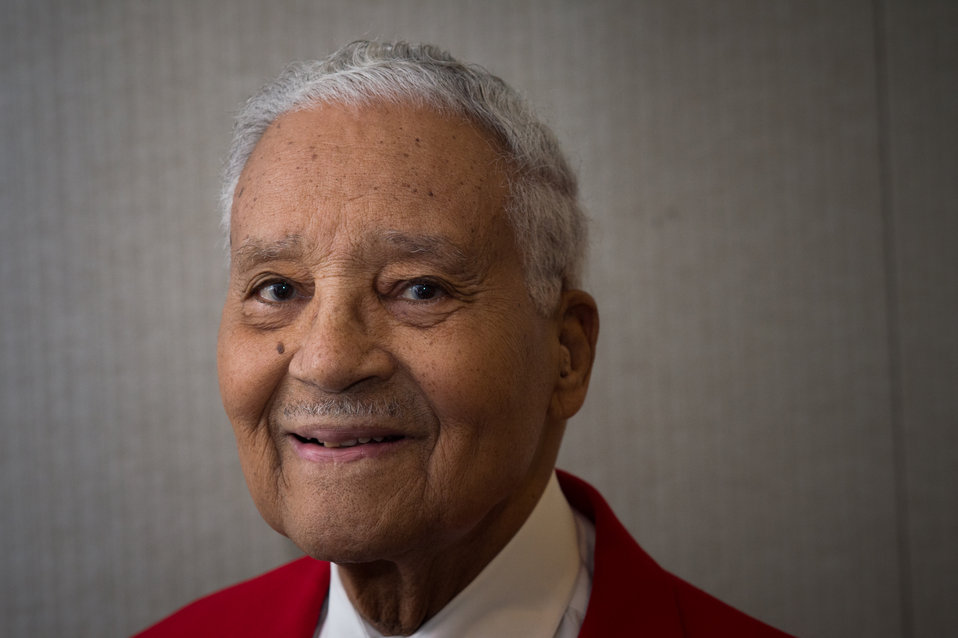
Pilot and Tuskegee Airman, Colonel Charles Edward McGee, U.S. Air Force (USAF) ret. was a guest speaker at the U.S. Department of Agriculture's (USDA) Office of the Assistant Secretary for Civil Rights (OASCR) program “In conversation With Tuskegee Airmen”, which honored the airmen’s successes both overseas and at home at USDA in Washington, D.C. on Thursday Mar. 27, 2014. Col. McGee spoke about his experiences in the Army Air Corp, (later the Army Air Force and U.S. Air Force). Questions from the audience provided several opportunities for discussion about civil rights challenges and how they achieved success and respect.